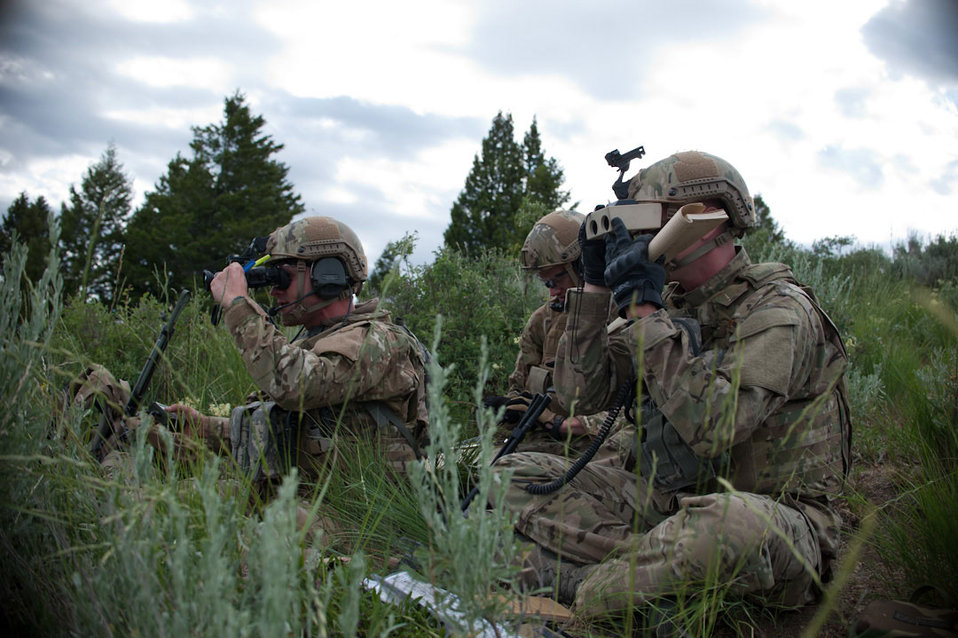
Eyes on the battlefield...

Joint terminal attack controllers and tactical air control party Airmen from the 124th Air Support Operations Squadron conduct over-watch and close air support training July 14, 2011, during Operation Mountain Fury in the Idaho Sawtooth National Forest. The 124th ASOS Airmen are conducting a variety of training exercises during Operation Mountain Fury, including small-unit tactics, mounted patrols and CAS missions.